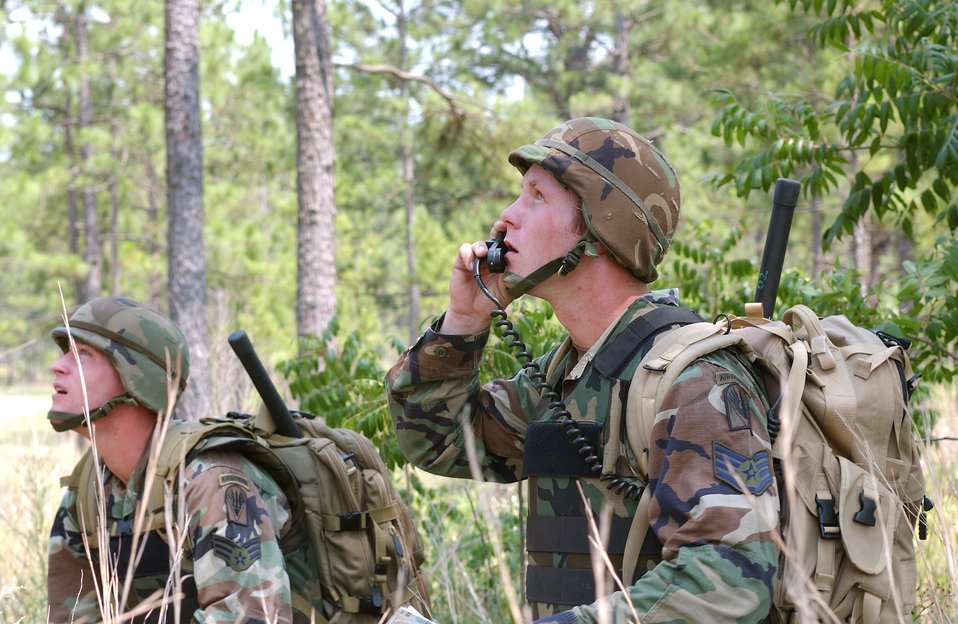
Air Warrior II tests aircrews and controllers

FORT POLK, La. -- Staff Sgt. Dan Kovarik (right) and Senior Airman Joshua Cullins guide an A-10 Thunderbolt II onto a target during a live-fire portion of Air Warrior II here. The joint exercise trains Army units with embedded Air Force joint terminal attack controllers in a realistic battlespace. Troops face a live enemy force, local role players and a variety of targets for air and ground forces.